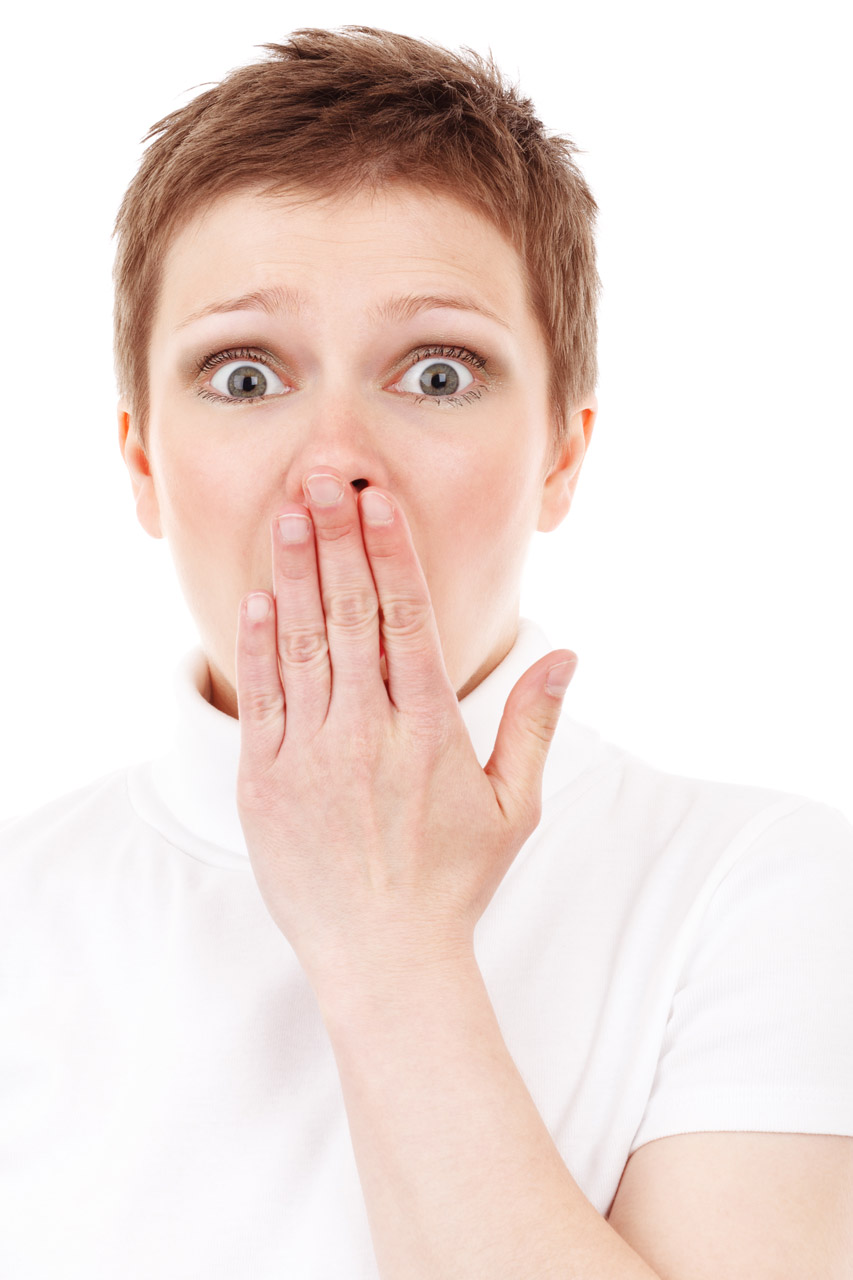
Surprised look

Surprised young woman isolated on white background.